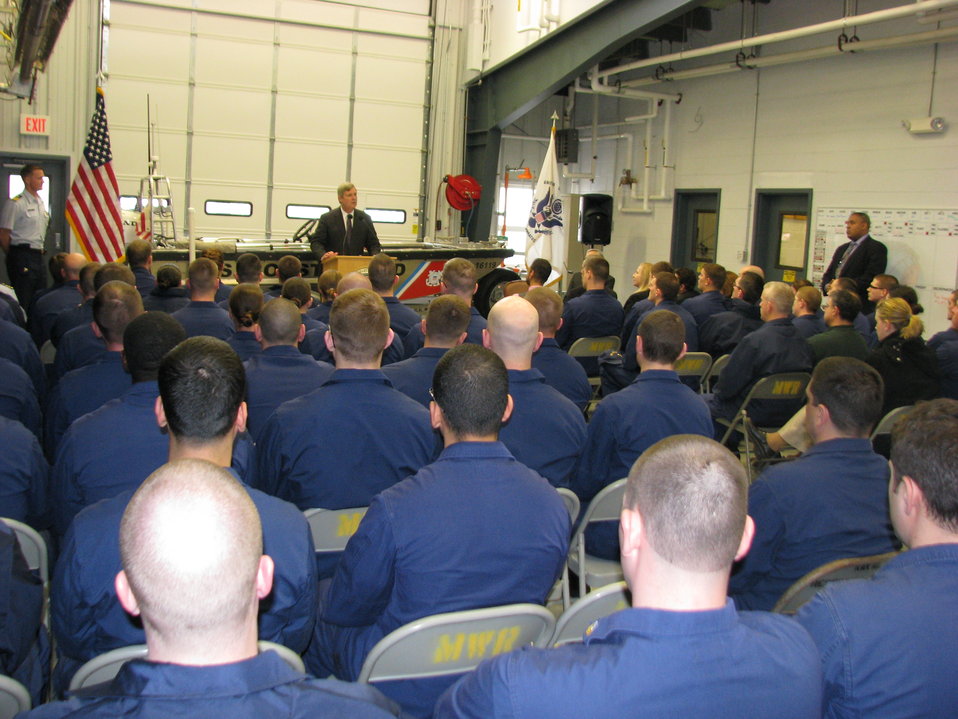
Agriculture Secretary Tom Vilsack speaks to the crewman of the buoytender USCG Marcus Hanna at the U.S. Coast Guard Station in South Portland, ME on Thursday, Mar. 14, 2013. Secretary Vilsack highlighted the importance of nutrition to America’s military readiness. Today, only a quarter of Americans aged 17 to 24 are eligible to serve in the armed forces – in part because many are overweight or obese.